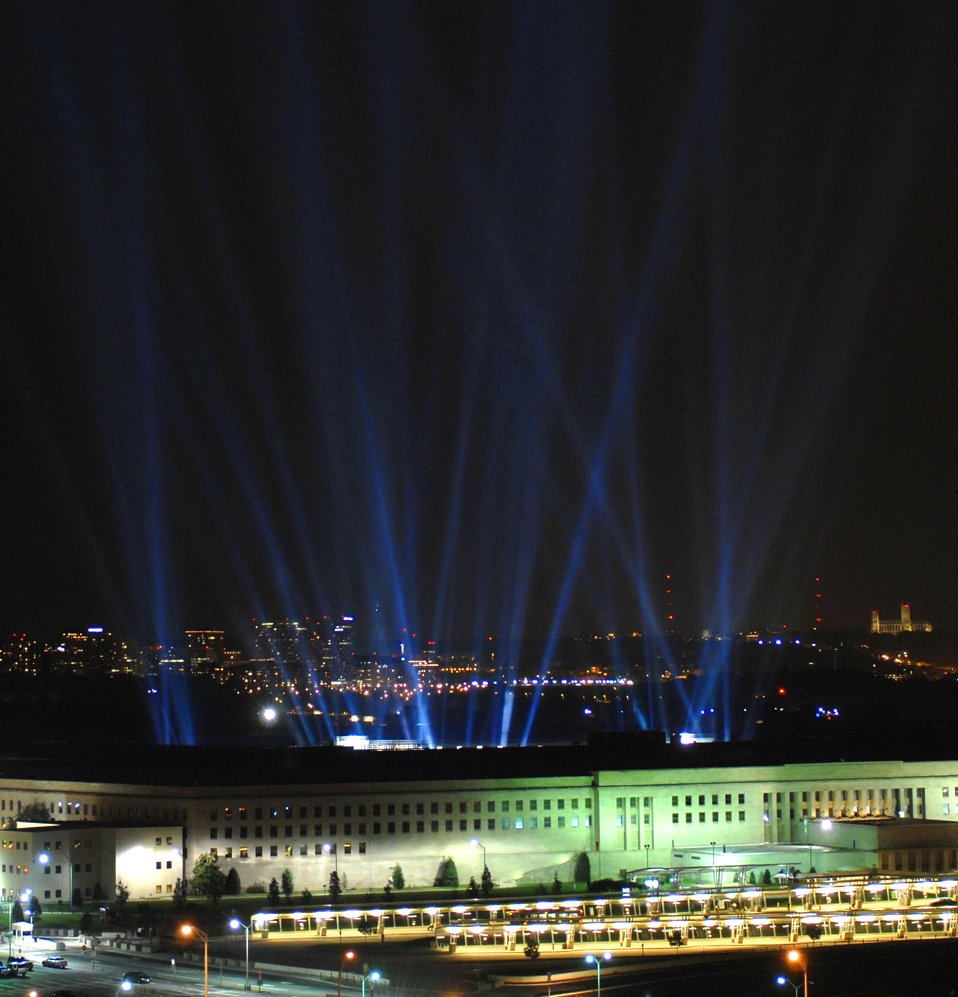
Beams of light honor those who died at Pentagon

Military members illuminate 184 beams of light in honor of those who lost their lives at the Pentagon during the attacks on Sept. 11, 2001, at the Pentagon.